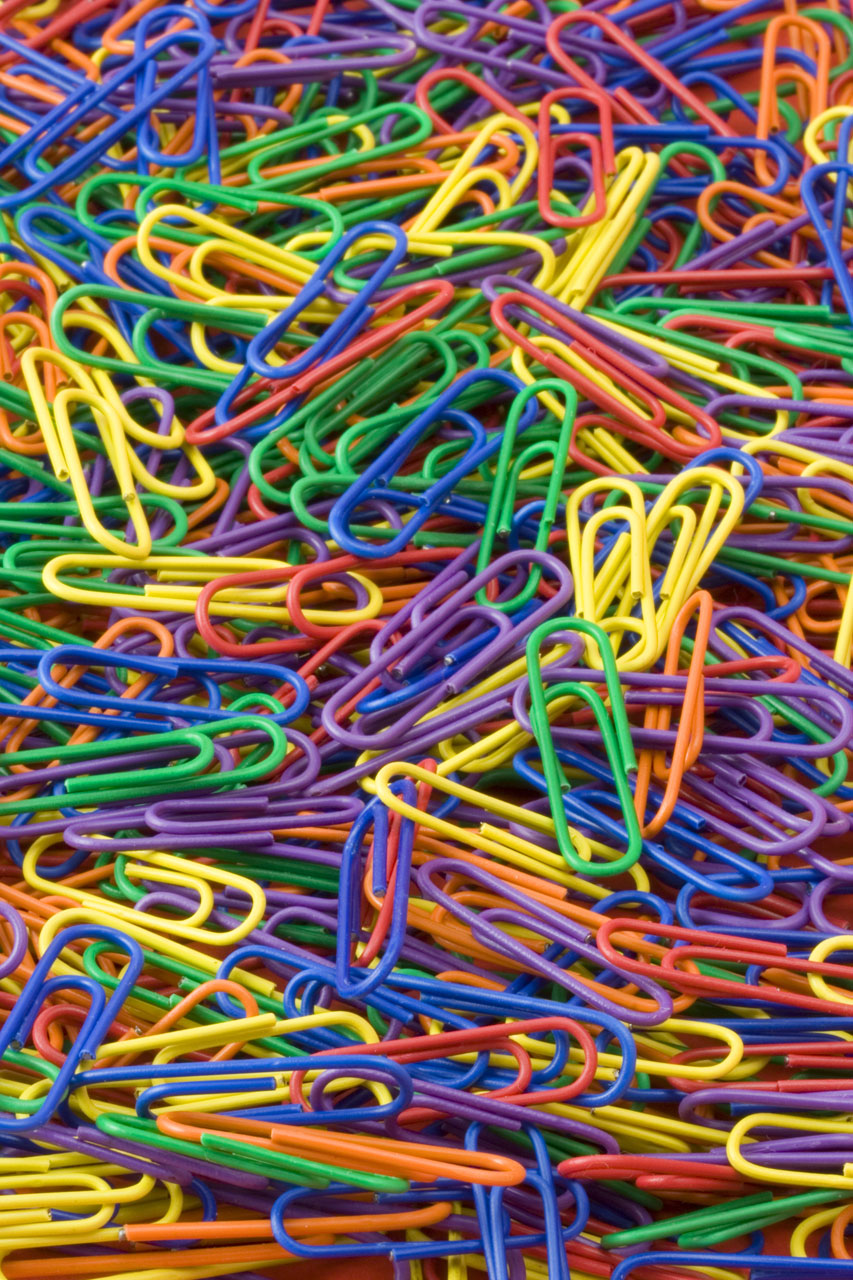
Paper clips

Colourised office paper clips.